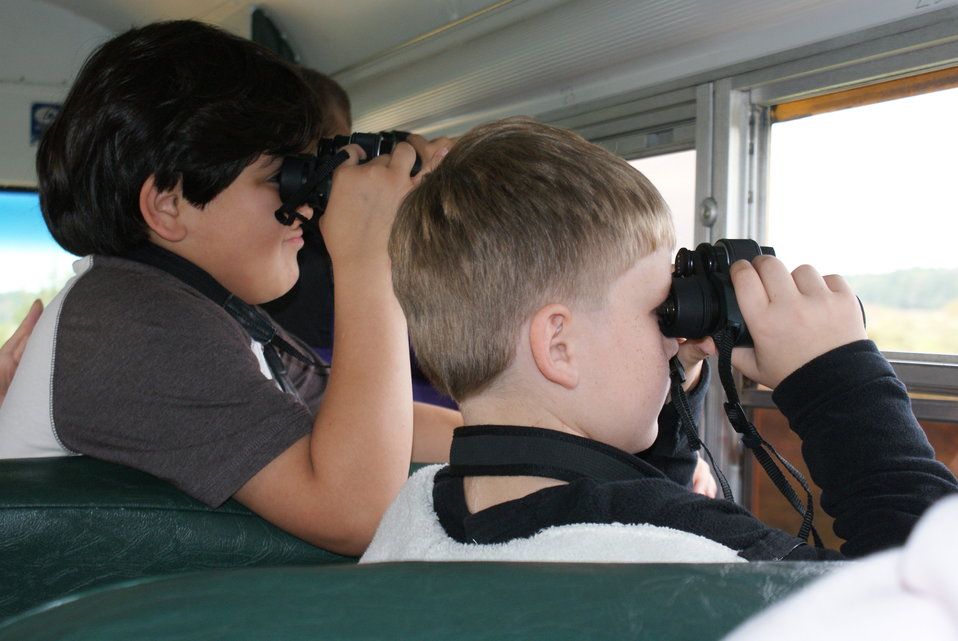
Environmental education

Child viewing wildlife at Blackwater National Wildlife Refuge.